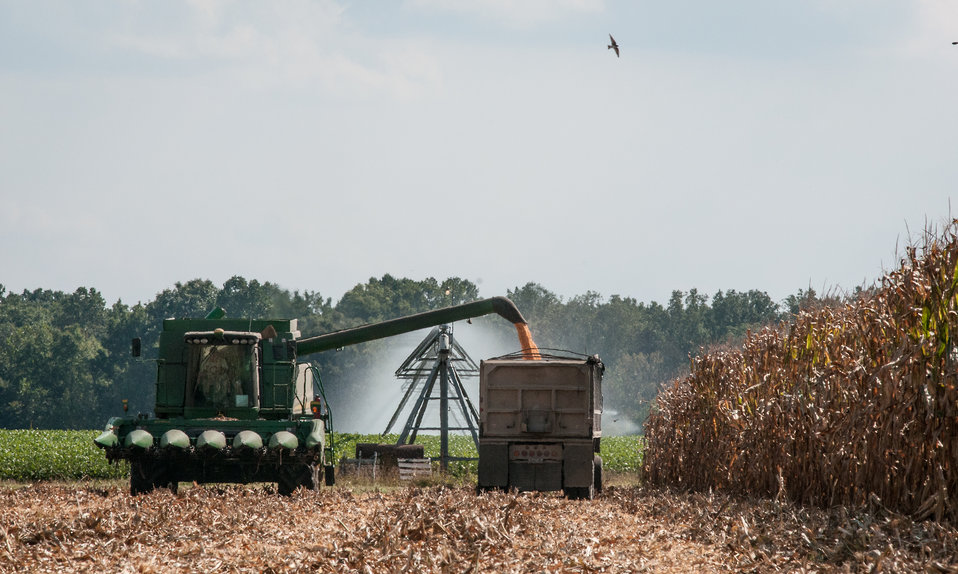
John N. Mills, Jr. operates his six-row corn harvester during the feed corn harvest at the John N. Mills & Sons farm; a family owned business located in the Hanover and King William Counties of Virginia, on Friday, Sept. 20, 2013. Pleasant Level Farm was the original farm from a Land Grant from King George III of England to Nicholas Mills in 1725. The original acreage has never left the Mills family name and continues to be farmed by the family.
Now the farm covers 5,744 acres that produce corn, wheat, soybeans, barley, hay, timber, and pastures a large herd of beef cattle. They have been using conservation and stewardship practices since the 1960s. Some of the efficient practices include no-till planting and cover crops to reduce soil erosion and prevent the leaching of nutrients into ground water, as well as livestock stream exclusion. The farm has several conservation easements that aids in the preservation and restoration of wetlands and waterways. For information about the U.S. Department of Agriculture (USDA), please go to www.usda.gov.